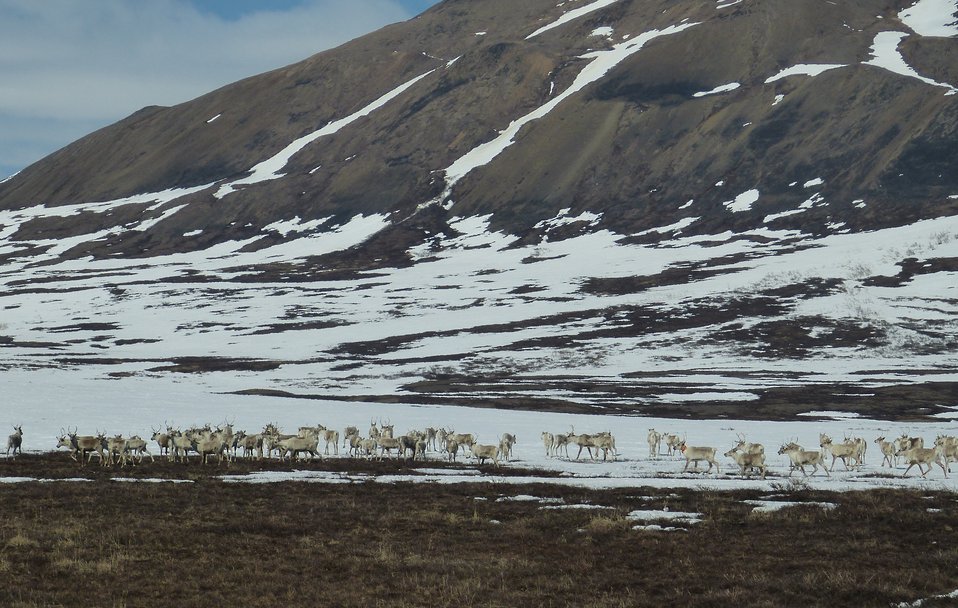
Caribou in Kilbuck Mountains on Yukon Delta National Wildlife Refuge. Includes a collared caribou.

Photo credit: Kristine Sowl
USFWS, Yukon Delta National Wildlife Refuge